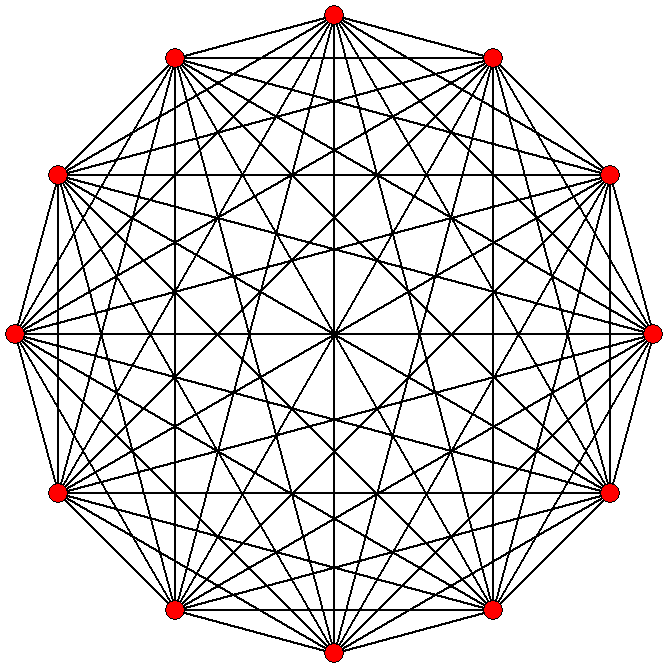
11-simplex graph